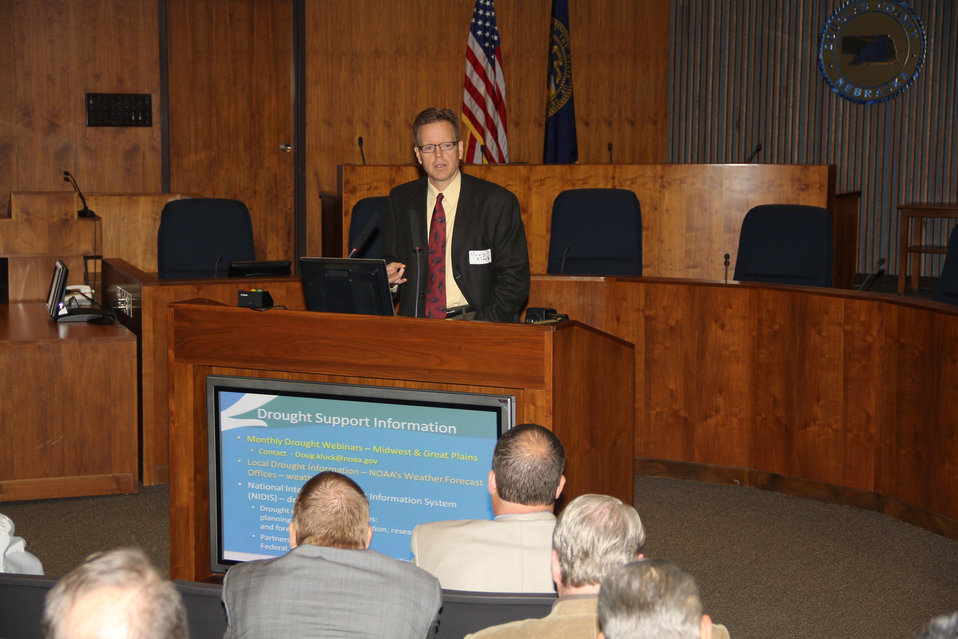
National Oceanic and Atmospheric Administration representative Doug Kluck discusses how weather patterns this fall and winter may impact drought conditions, at the Federal Drought Meeting in Omaha, NE on Tuesday, Oct. 9, 2012.